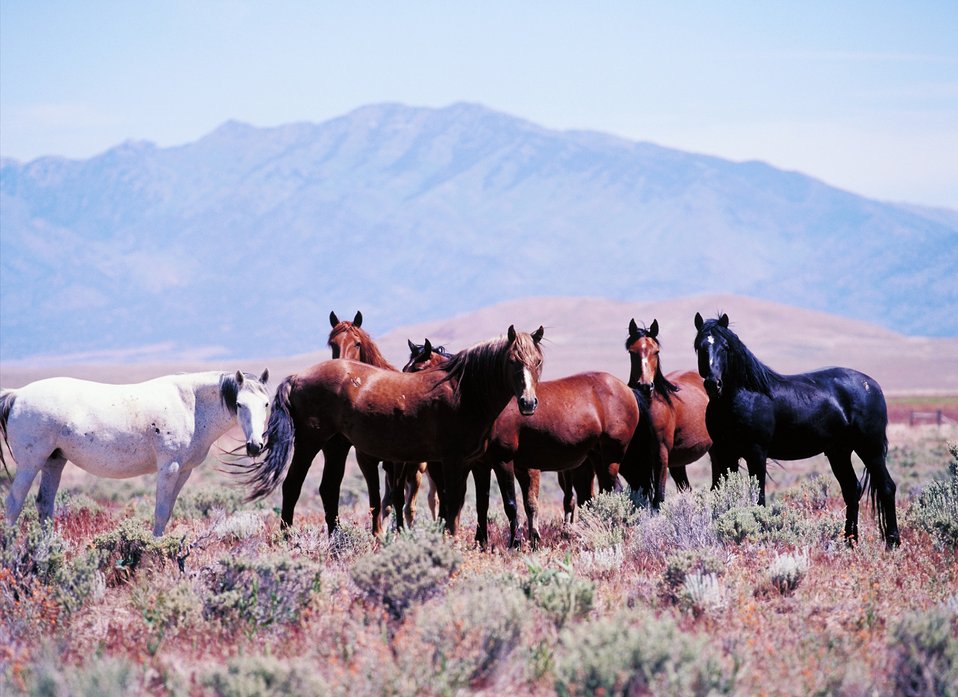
Onaqui Herd near Dugway, Utah.